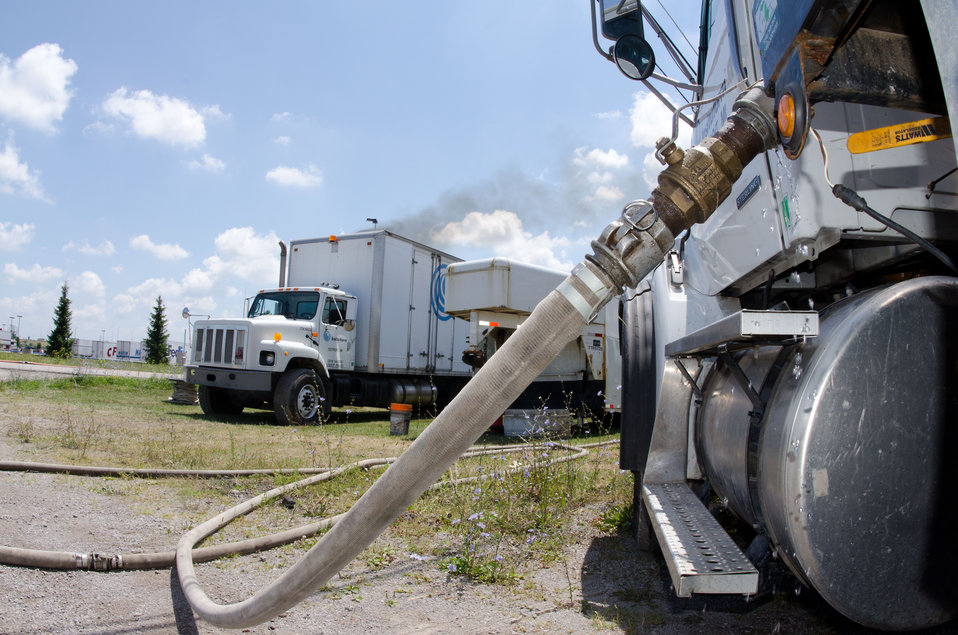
Water hoses from a tanker truck leads to a truck mounted boiler that heats water for recirculation into white resin impregnated fabric in a sanitary sewer pipe that runs under these grounds. It will cure the fabric into a hard plastic pipe lining from one manhole to the next one, on Tuesday, July 19, 2011, as part of Buena Vista Township Phase II Sewer Project, in Michigan, where the United States Department of Agriculture funded the refurbishment and rehabilitation of 45,500 linear feet of defective sewer pipe, and more than 200 manholes; on Tuesday, July 19, 2011. The project includes the construction of an off-site excess flow basin; construction of a pump station; and improvements at the wastewater treatment plant. The system will serve 2,349 residential and 177 commercial customers and will bring the township into compliance with environmental regulations regarding pollutant discharges.
Inspections revealed that the 1960s sanitary sewer system had inflow from storm and rainwater systems and overflowed into the sanitary sewer system. Infiltration was found in the form of cracks, and other failures that allowed groundwater to enter. Rather than digging up the old system, rehabilitation with a cured-in-place-pipe (CIPP) method was chosen. This provides up to a 50% savings and the liner is projected to last 50-100 years. CIPP repair of the 8-30” diameter pipes involves pulling a resin-saturated fabric liner through a damaged pipe, which is then cured with steam or hot water to form a tight-fitting, joint less replacement pipe. Trenchless repair methods require less digging than traditional “dig and replace” repair methods and minimize damage to yards and landscaping. There are two of these teams and one manhole rehabilitation to seal the underground casting frame or brick structure. They process 600-800 feet per day.
Wade Trim Inc. Professional Engineer Tiffany Harrison said about working with the United States Department of Agriculture’s Rural Development “It was very easy, they make it very straight forward, in what paperwork they need. They were always available for questions.
USDA Rural Development has funded water and sewer projects in 117 Michigan communities serving more than 94,000 customers.
Senior Advisor to the Secretary of Agriculture Doug O’Brien said, “America will win the future by out-building, out-educating and out-innovating the world,” O'Brien said. “The Obama Administration is committed to the residents and business owners of Buena Vista Township in building the infrastructure needed to protect our environment and ensure clean water for future generations.” Being almost entirely surrounded by the Great Lakes, Michigan residents know that a small problem upstream usually leads to much bigger problems downstream and that the impact of water pollution extends far beyond the immediate community.